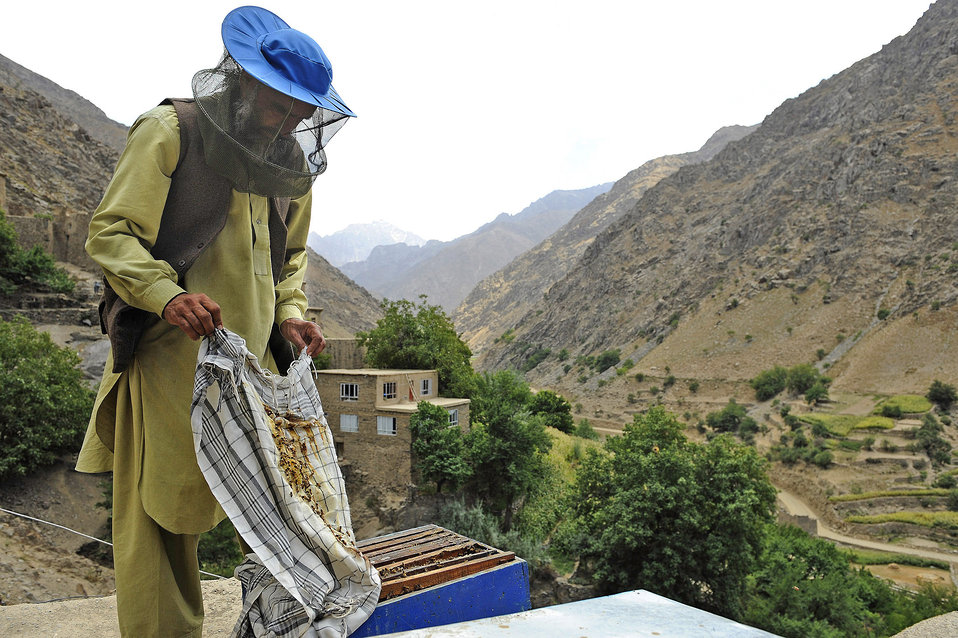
Bringing bees in to produce honey and pollinate Panjshir

A local beekeeper in the Dara district of Panjshir province, Afghanistan, attends to one of his hives Sept. 7, 2009. The original two colonies given to him in 2008 have grown into 10.